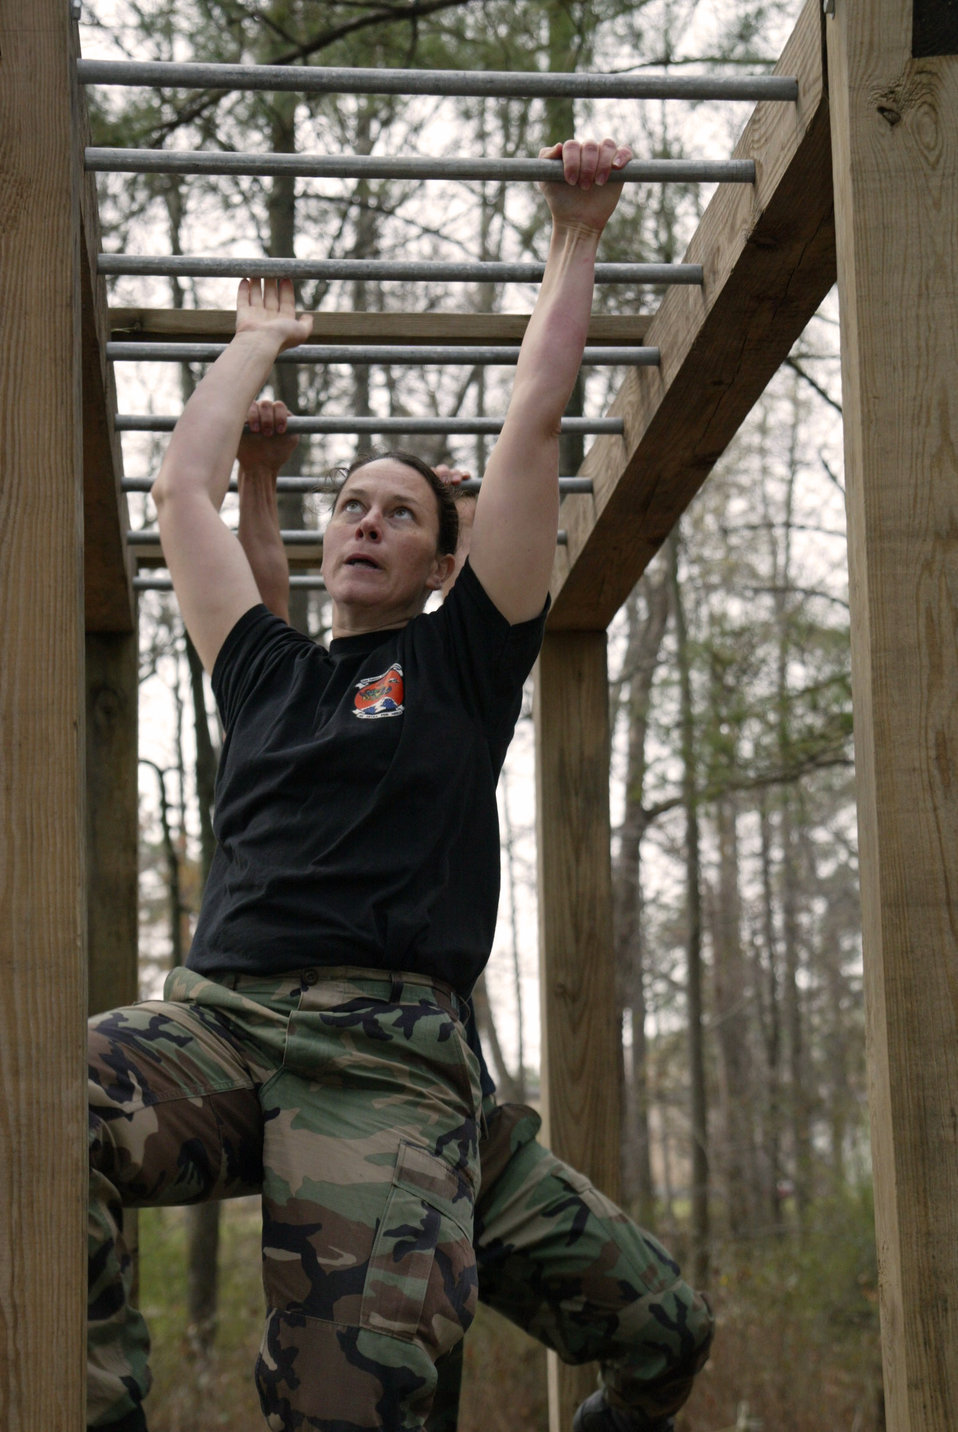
Competition aids Air Force Assistance Fund

POPE AIR FORCE BASE, N.C. -- Tech. Sgt. Tammy Boedges crosses the monkey bars during an Air Force Assistance Fund competition here April 1. The competition, which raised $520 for the fund, included 26 teams from around the base. Sergeant Boedges was part of the 3rd Aerial Port Squadron team, which finished the course in 6 minutes, 50 seconds.